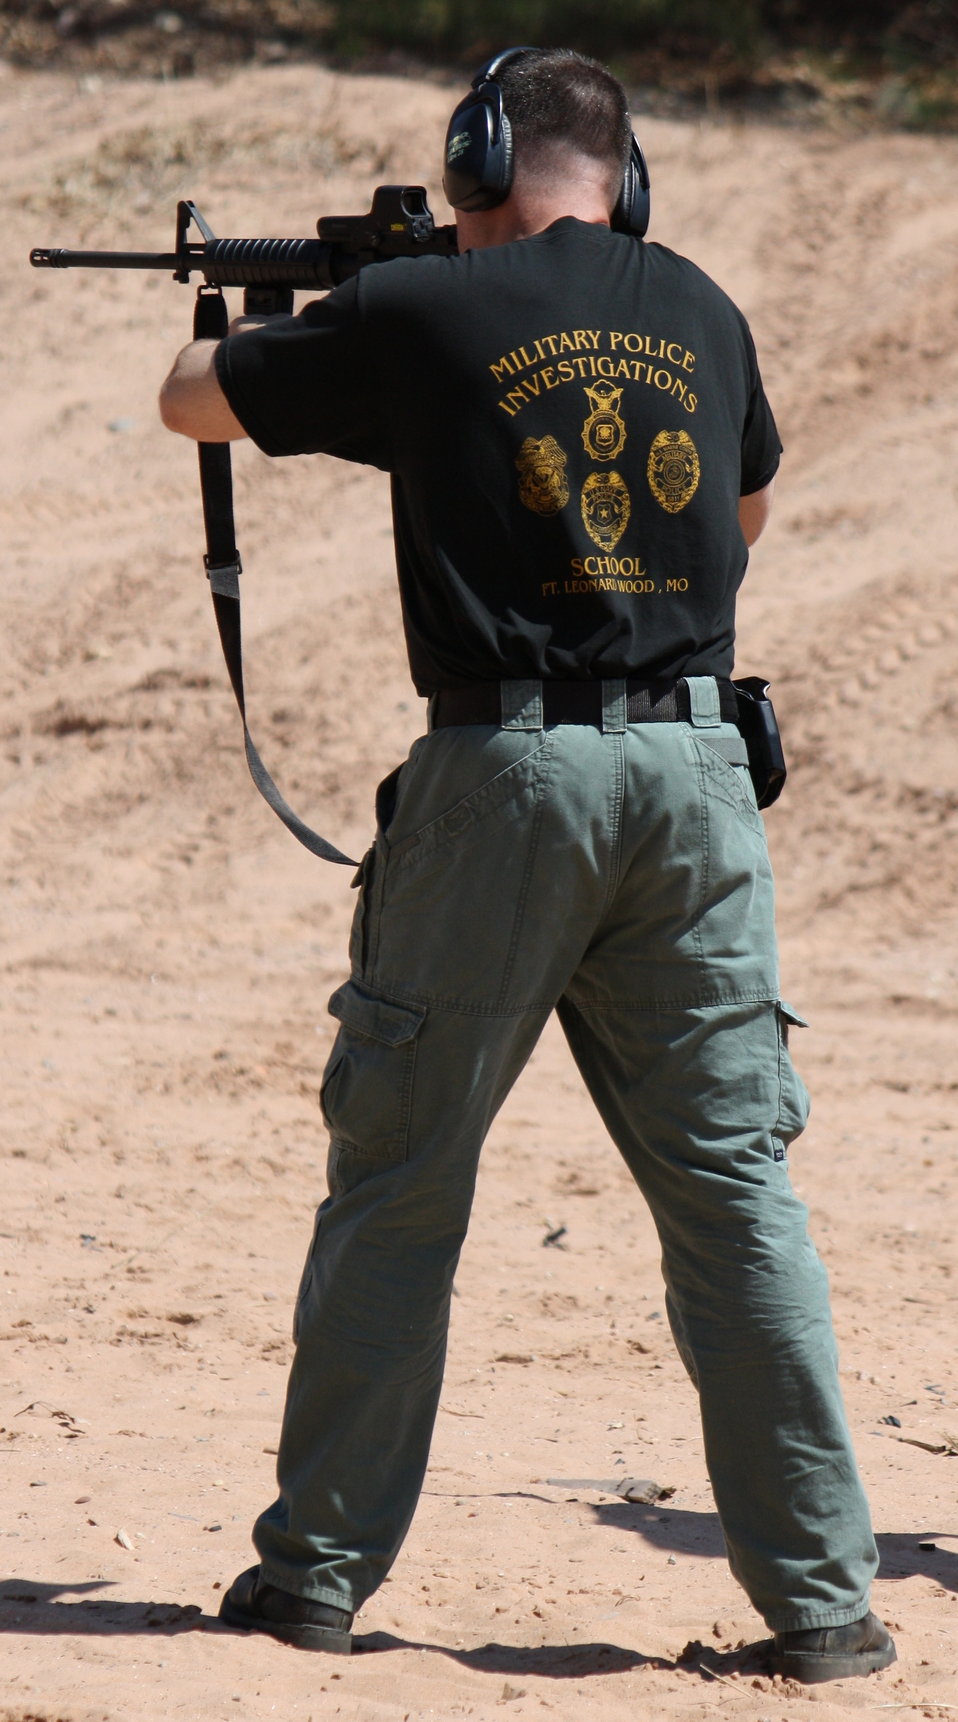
Special Agent Firing AR-15

Law Enforcement target practice at outdoor shooting range in Glastonbury, CT.